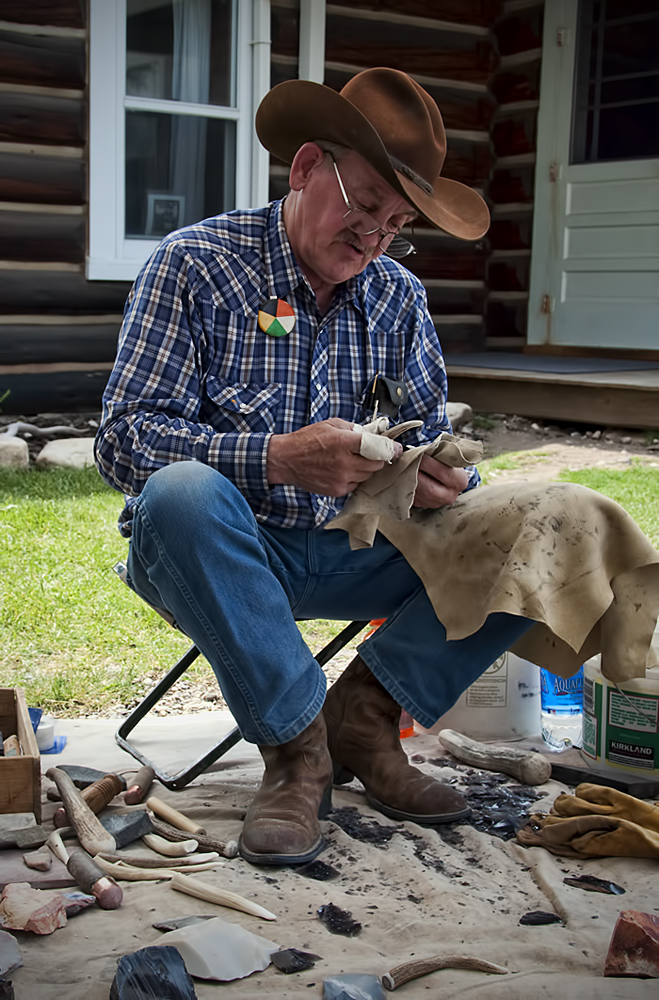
The Art of Ancestral Tool Making

Tom Lucas, an artist that displays his work at the Silver Sage Gallery in Dubois, Wyoming, gave a flint knapping demonstration at the Historic Miller House during the National Elk Refuge's centennial weekend. Lucas has a working knowledge of the methods of ancestral tool making.

Credit: USFWS / BJ Baker, National Elk Refuge volunteer